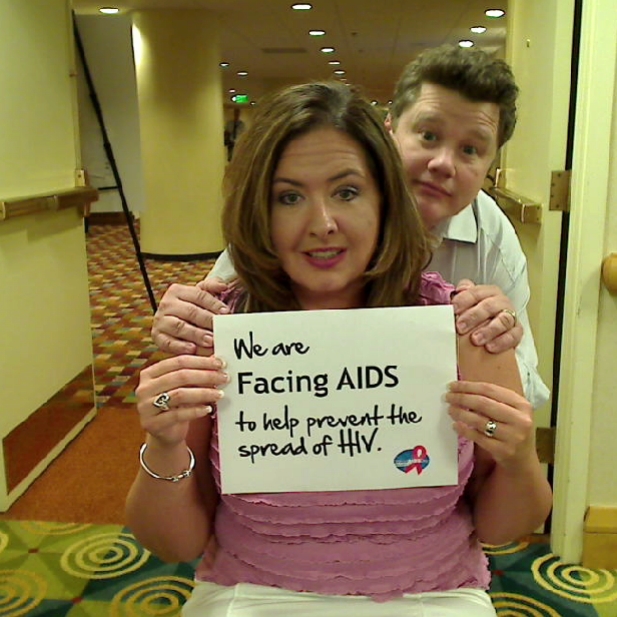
We are Facing AIDS to help prevent the spread of HIV.